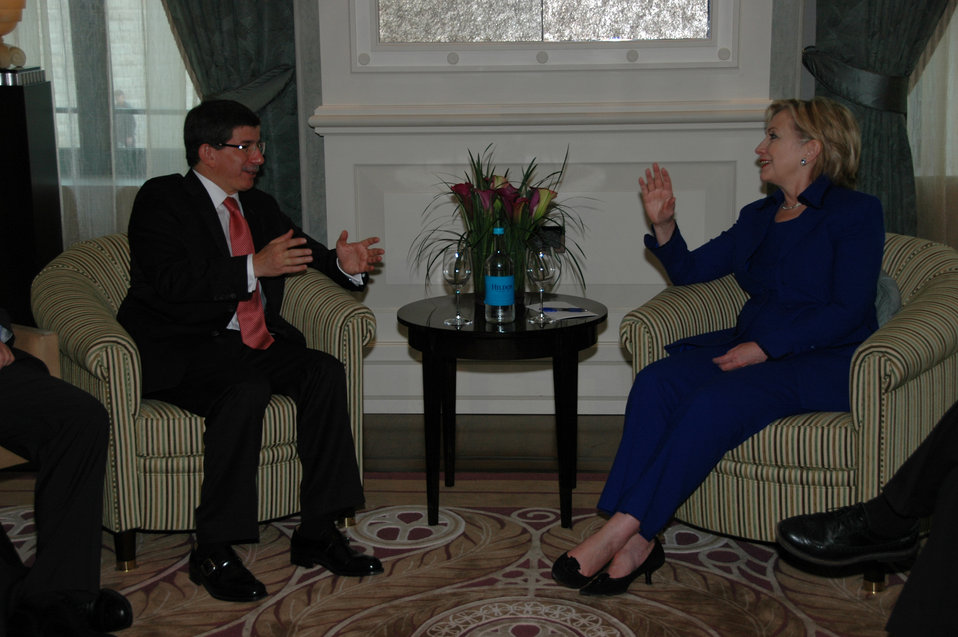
Secretary Clinton Meets With Turkish Foreign Minister

U.S. Secretary of State Hillary Rodham Clinton with Turkish Foreign Minister Ahmet Davutoglu in Zurich, Switzerland October 9, 2009.